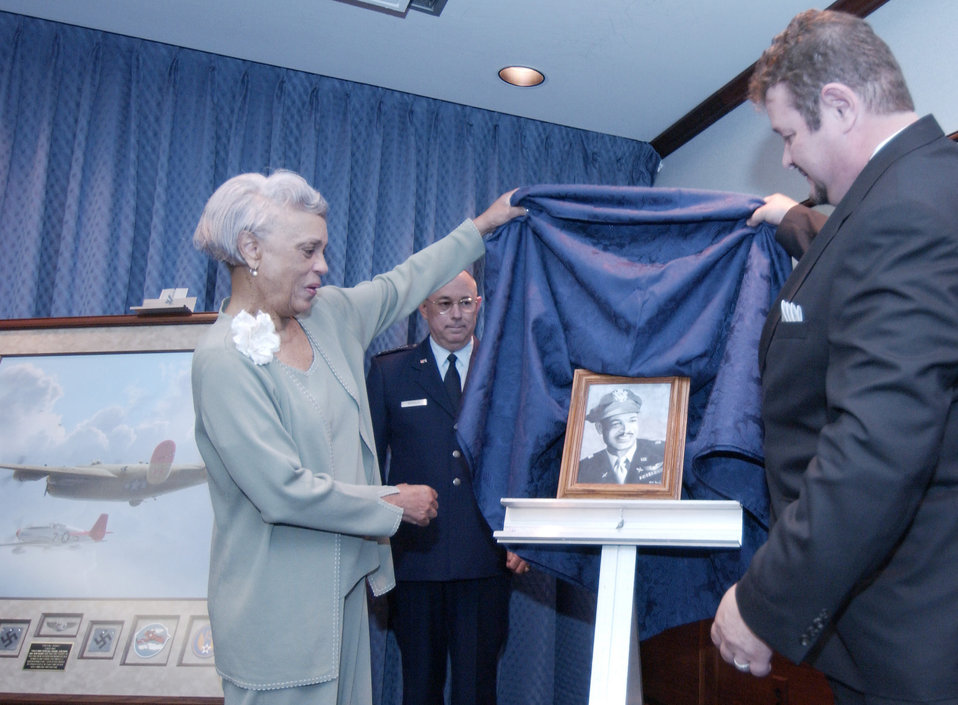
Tuskegee Airman Painting unveiled at Pentagon

WASHINGTON -- Jacqueline Weathers (left) and artist Mickey Harris unveil a portrait of her husband, retired Lt. Col. Luke Weathers, which was painted by Mr. Harris' son, Matthew. Air Force Vice Chief of Staff Gen. T. Michael Moseley looks on in the background. Earlier, General Moseley and Colonel Weathers unveiled a painting honoring the famed 332nd Fighter Group of Tuskegee Airmen during a ceremony in the Pentagon on June 24.